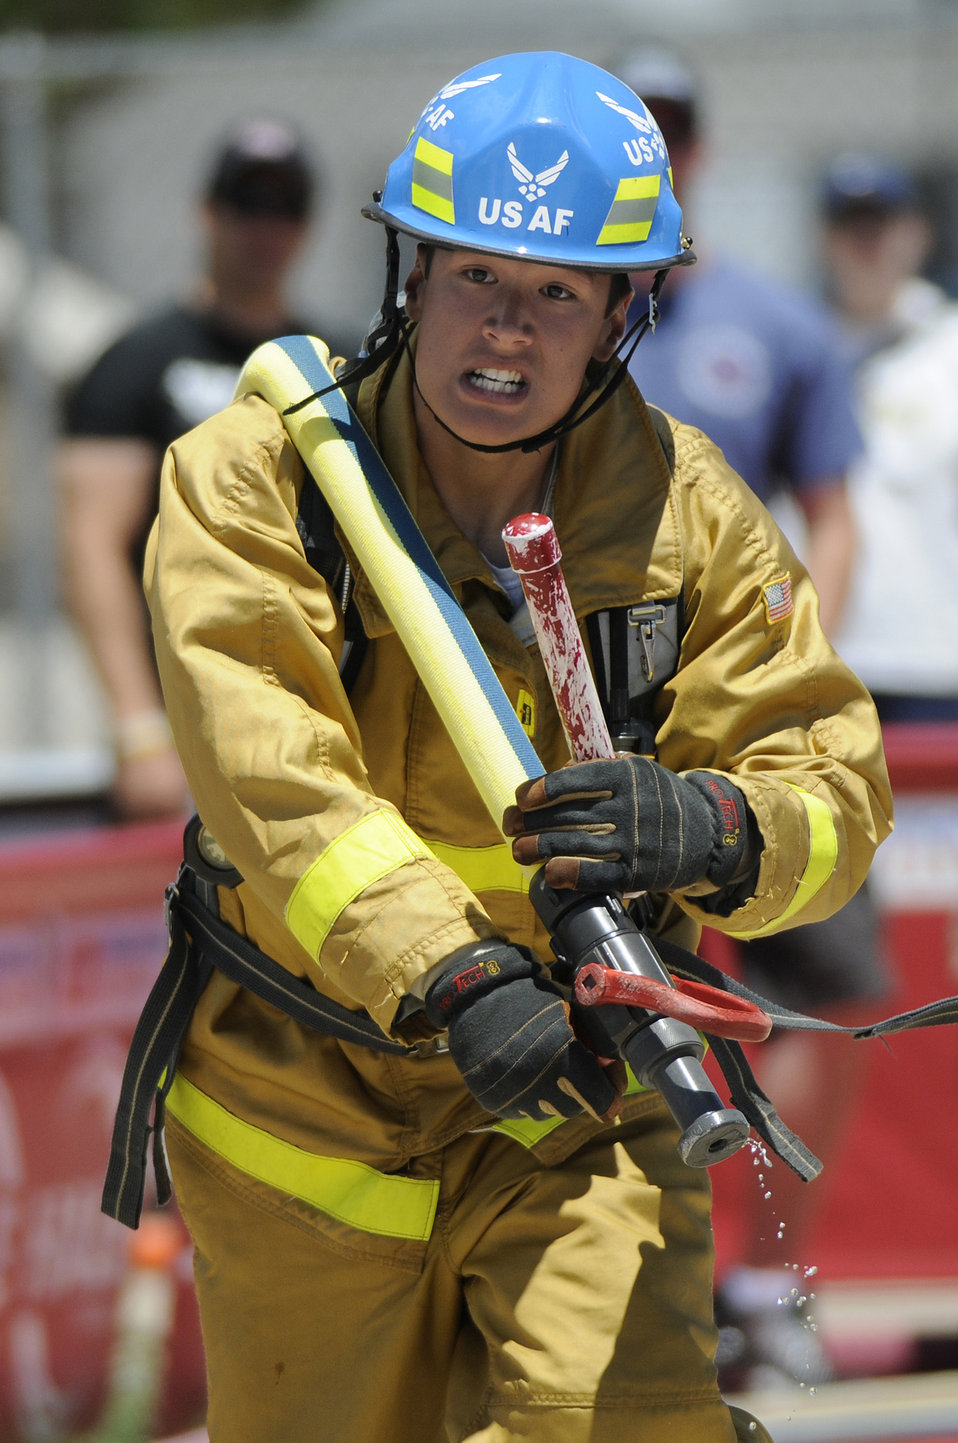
Firefighters Combat Challenge

Air Force Academy firefighter Airman 1st Class Steven Cimochowski drags the fire hose towards the target during team competition of the two-day regional Firefighter Combat Challenge competition which was held June 24/25 at the Air Force Academy's Falcon Stadium. The event showcased the skills of nearly 200 military and civilian firefighters, which included 28 academy firefighters. The national and world championships will be held in October and November, of which all academy firefighters qualified to participate.